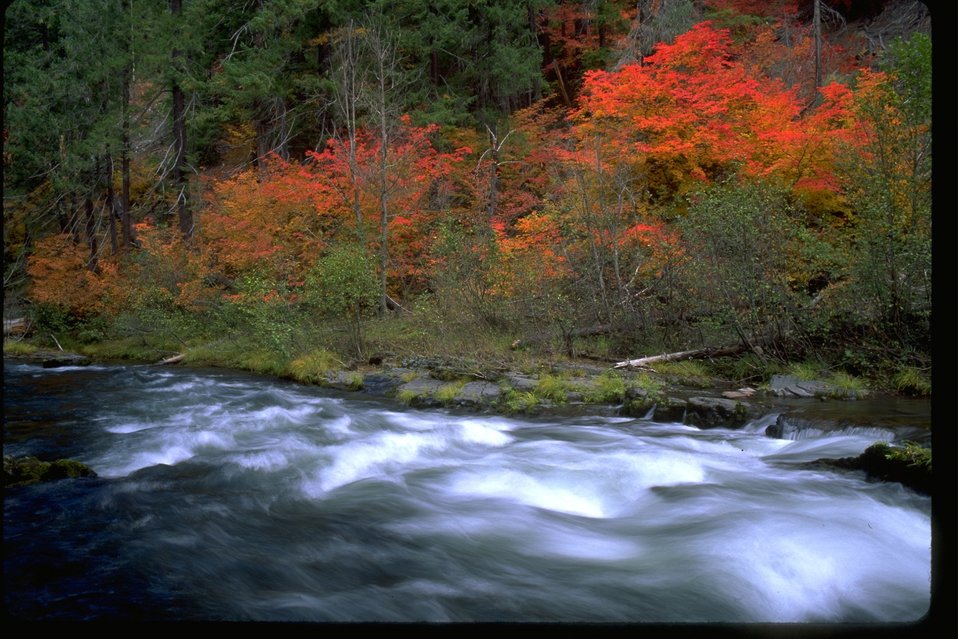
A scenic view of the Upper Rogue River and the fall foliage.